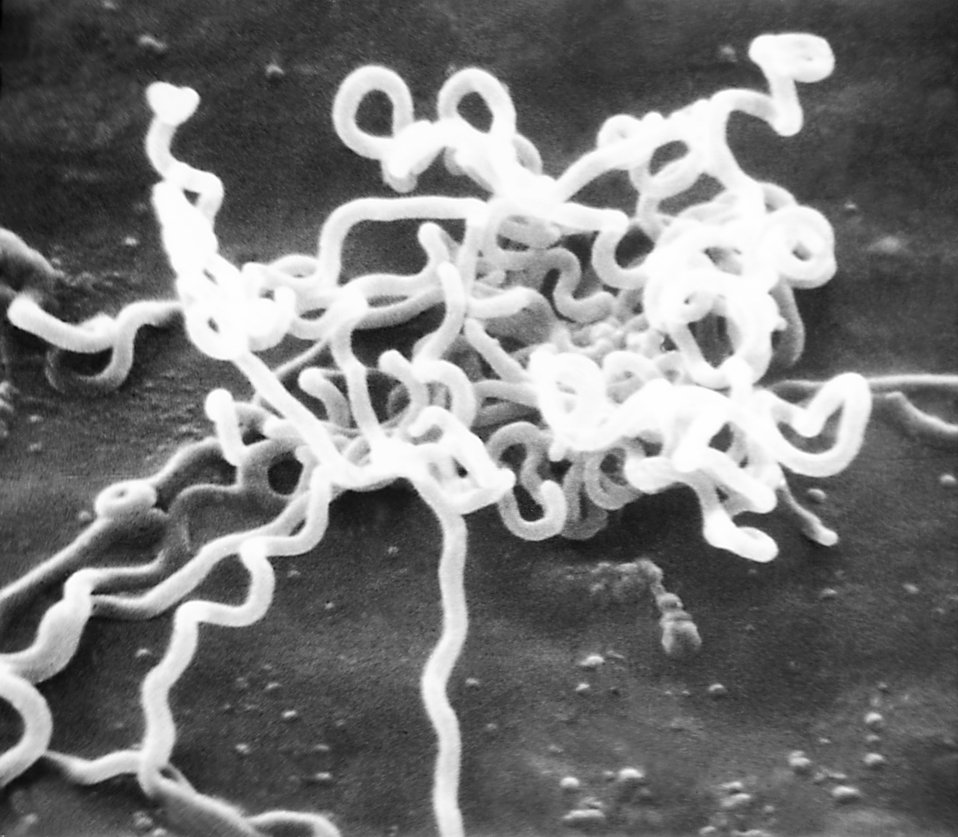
Electron micrograph of Treponema pallidum on cultures of cotton-tail rabbit epithelium cells (Sf1Ep).